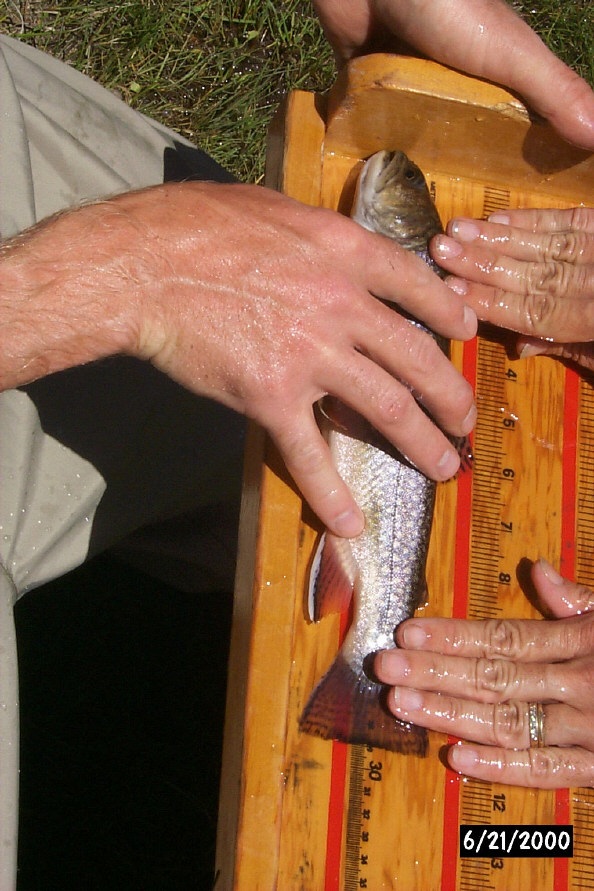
Brook Trout Salmon Field Office UCSC Upper Columbia Salmon Clearwater District